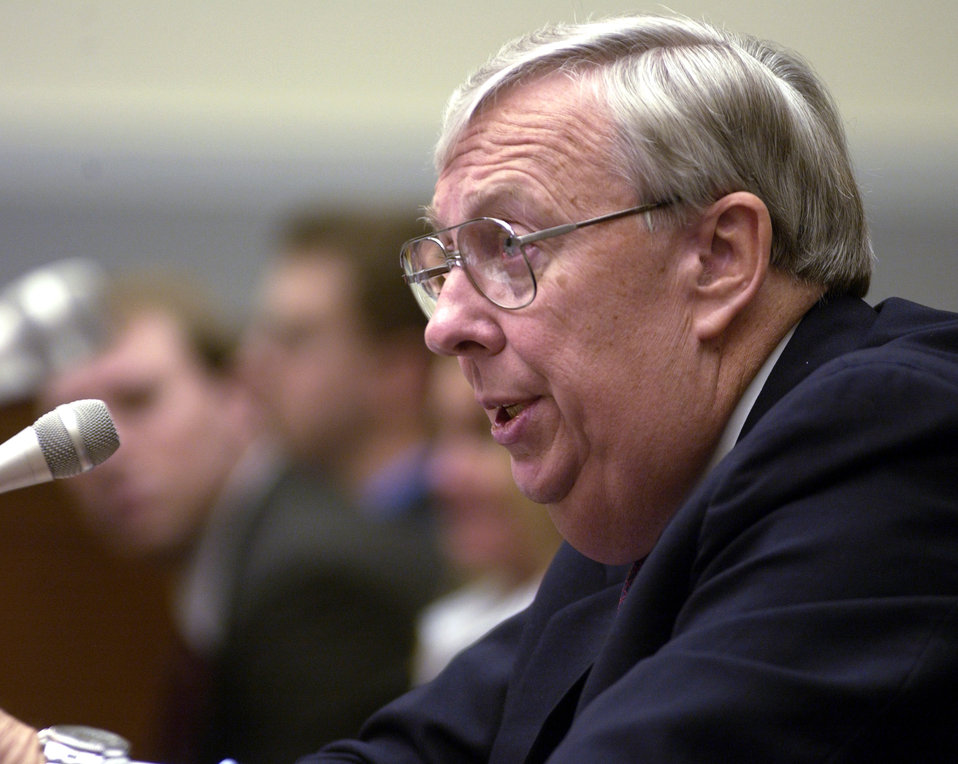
Defense acquisition system due for change

WASHINGTON -- Secretary of the Air Force Dr. James G. Roche told members of the House Armed Services Committee on Feb. 27 that America produces the world's best military aerospace hardware but other nations are pulling ahead. He said the apparent contradiction is the result of a cumbersome acquisition system.